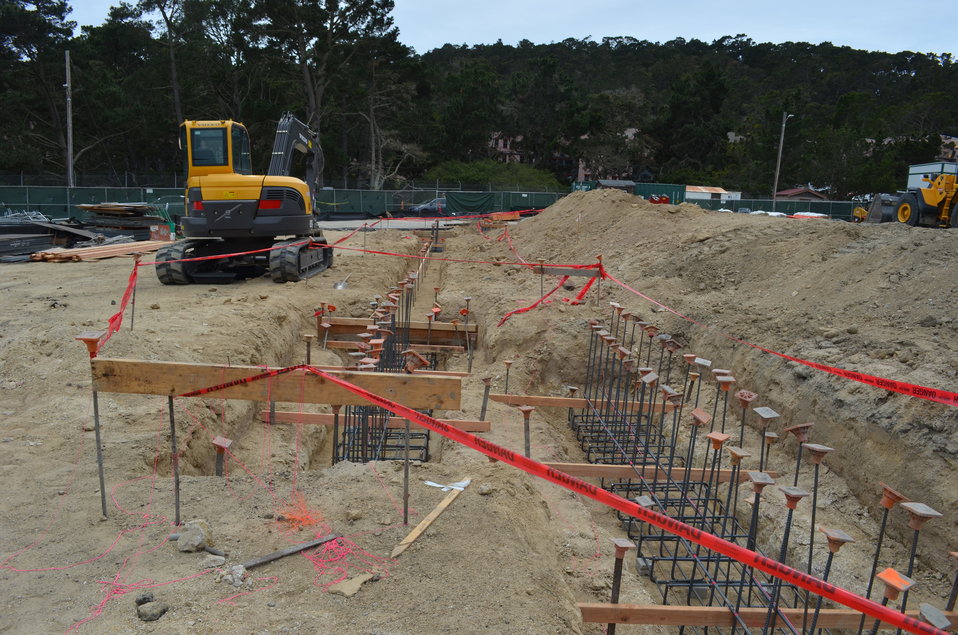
Corps manages vital projects at Presidio

The construction site for the new dining facility at the Presidio of Monterey located in Monterey, Calif., May 8, 2014. The U.S. Army Corps of Engineers Sacramento District broke ground on the new dining facility March 17, 2014, that is designed to feed up to 1300 personnel over a 90 minute period. The facility is one of several major projects at the Presidio of Monterey managed by the Corps and incorporates the latest energy and water conservation technologies in order to operate more efficiently and in a sustainable, environmentally friendly manner. Read more on the dining facility here: bit.ly/presidiodfac.